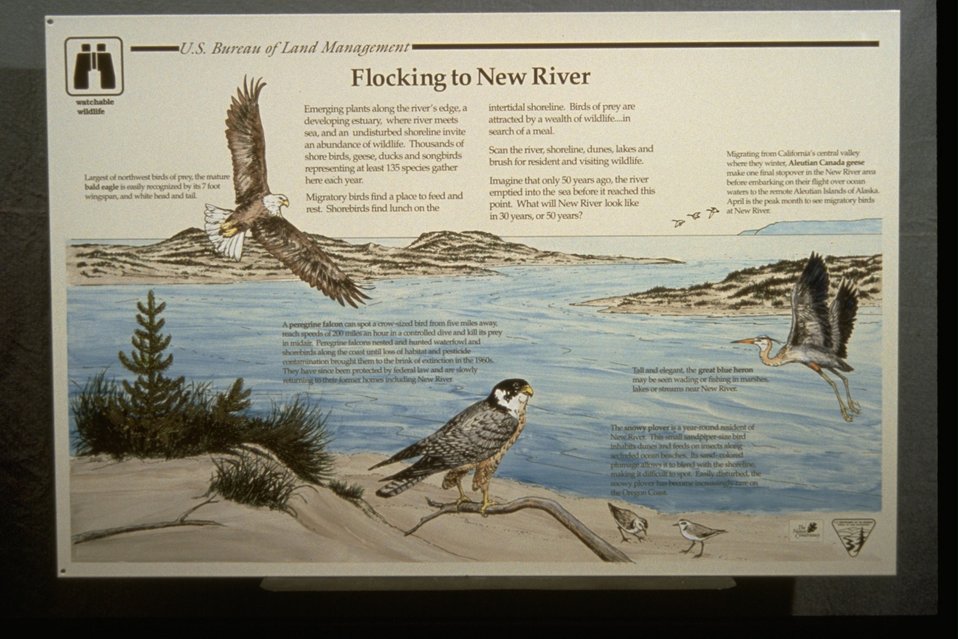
Close-up of the interpretive panell, "Flocking to the New River.